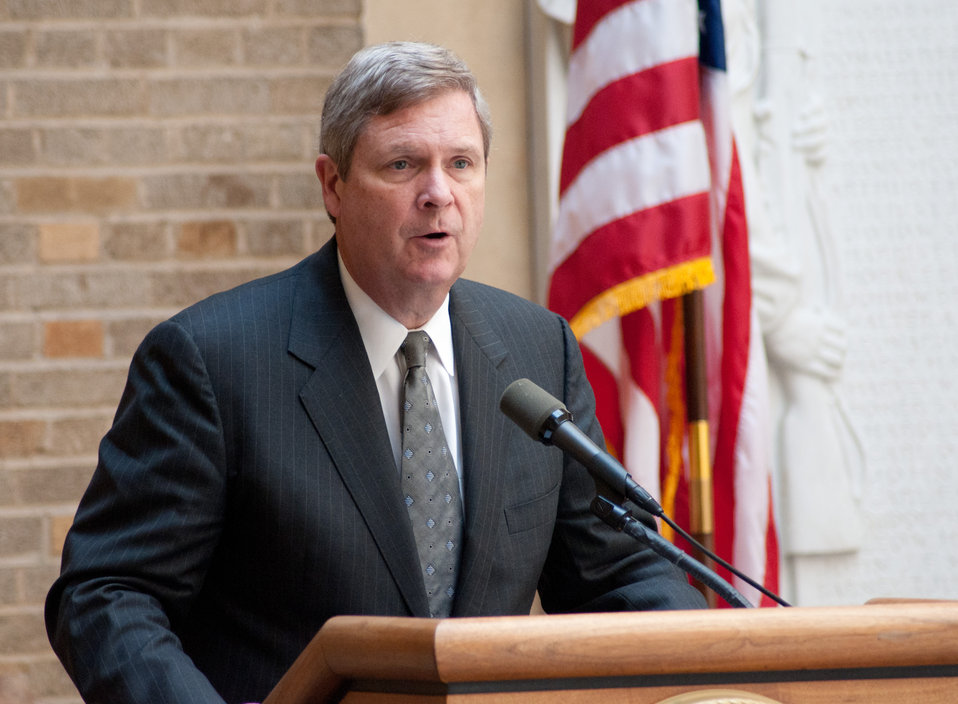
U.S. Department of Agriculture Secretary Tom Vilsack spoke about the Forest Service important role within USDA and about the recently published Watershed Condition Framework (May 2011) at the International Year of Forests (IYOF) celebration on Friday, June 3, 2011 on the Patio of the Whitten Building, U.S.Department of Agriculture in Washington, DC.